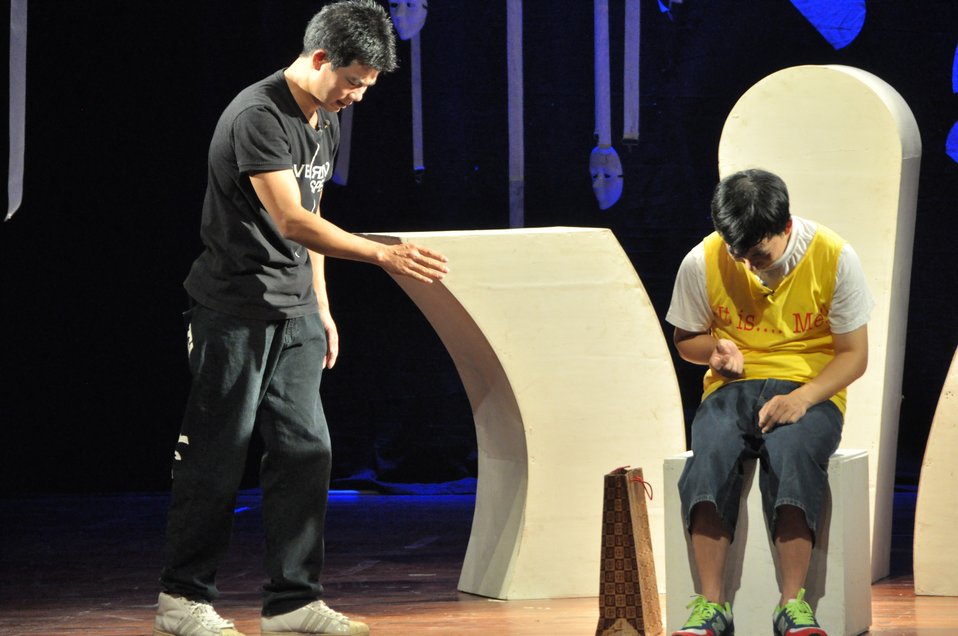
PEPFAR Musical Questions and Exclamations

Hanoi, May 17, 2013